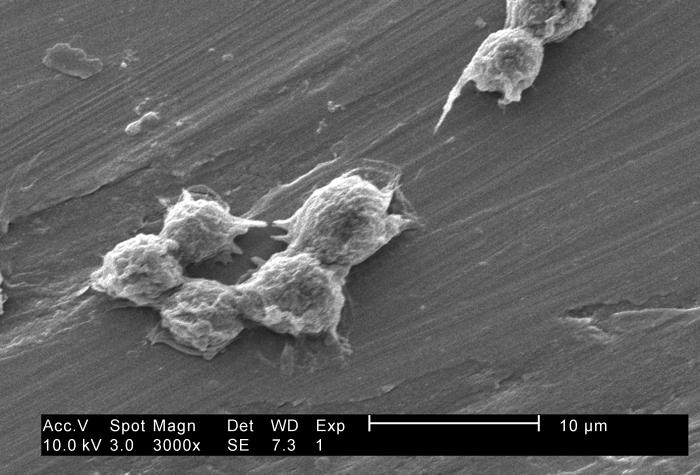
Under a moderately-high magnification of 3000X, this 2002 scanning electron micrograph (SEM) revealed some of the ultrastructural morphology exhibited by a number of Hartmannella vermiformis amoebae cysts.